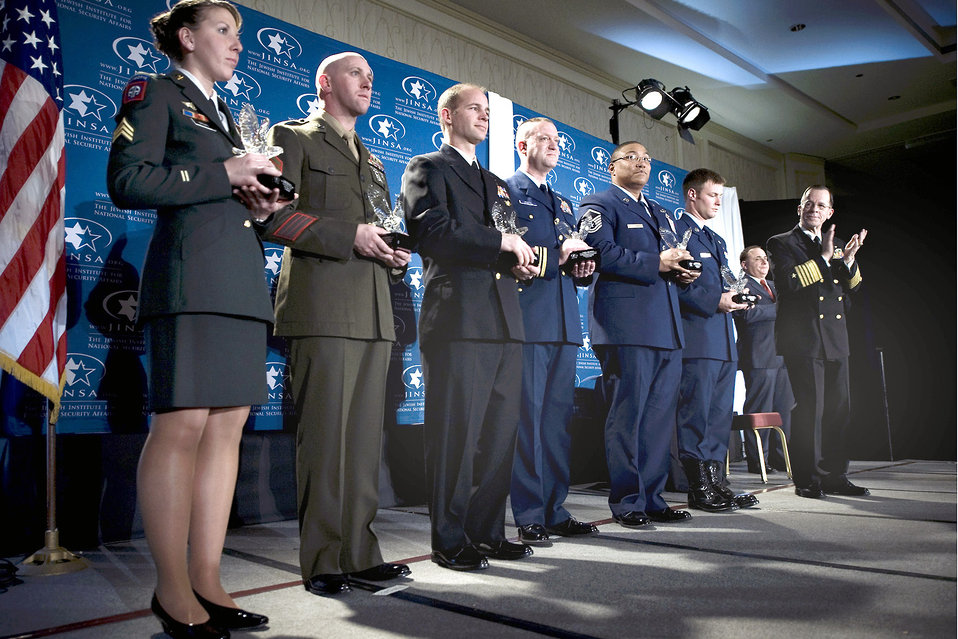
CJCS salutes servicemembers' success at awards dinner

Adm. Mike Mullen, chairman of the Joint Chiefs of Staff applauds in recognition of the six awardees presented the Jewish Institute for National Security Affairs (JINSA) Grateful Nation Award, Crystal City, Va., Dec. 8. The award recognizes them for having distinguished themselves through superior conduct in the war on terrorism.